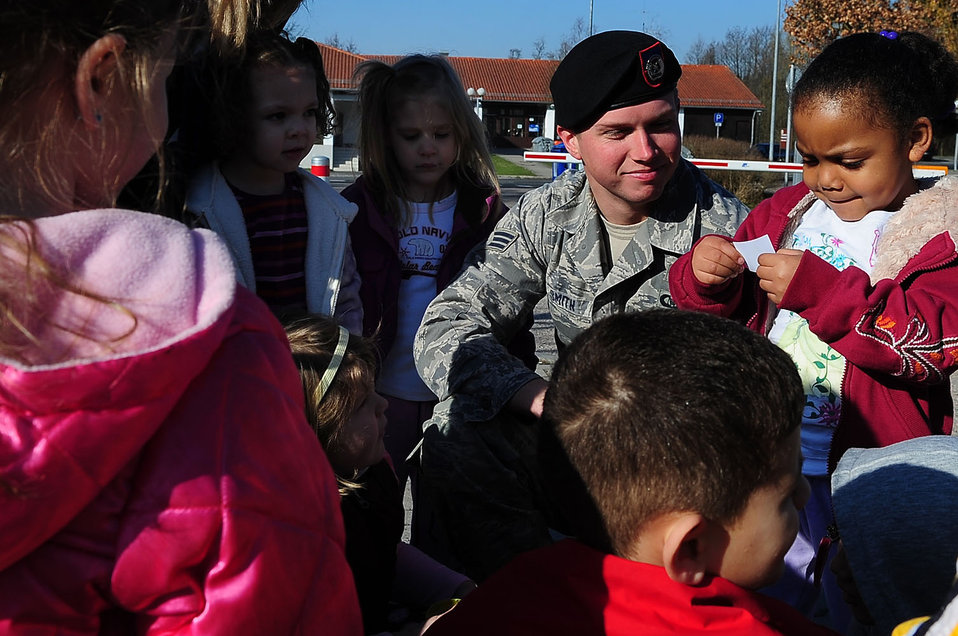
Ramstein Airmen provide 'boot camp' for military children

Senior Airman Truman Smith helps a group of children figure out a land navigation clue during the child development center's